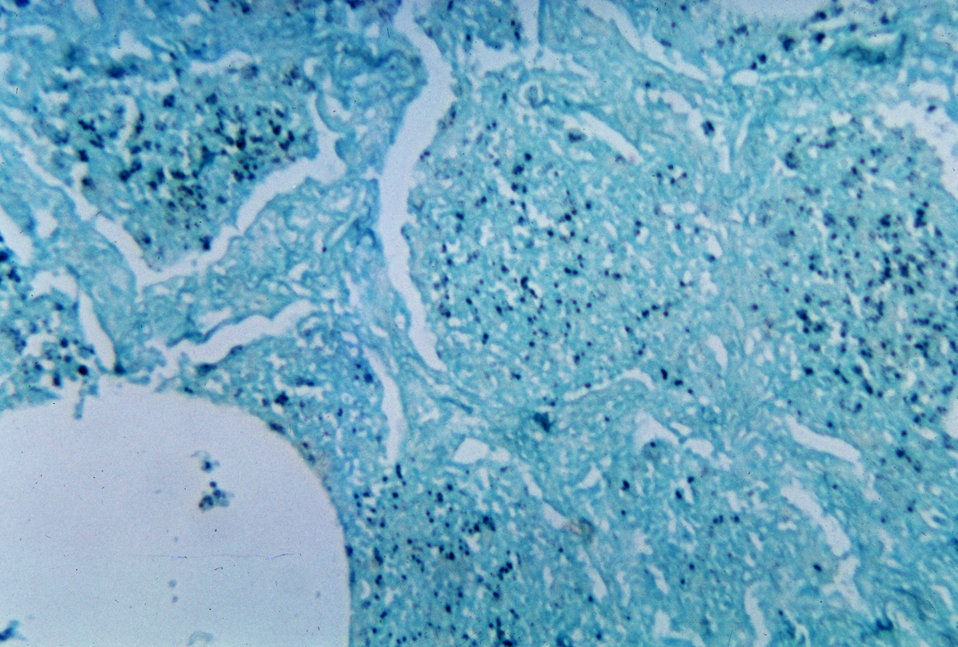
This micrograph depicts histopathologic changes associated with Histoplasmosis of the lung using methenamine silver stain.